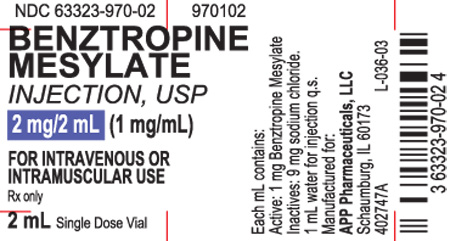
RECALLED – Benztropine Mesylate Injection

June 30, 2013 – Product Recall – Fresenius Kabi USA Issues Voluntary Nationwide Recall of Benztropine Mesylate Injection, USP 2 mg/2 mL (1 mg/mL), in 2 mL Single Dose Vials.